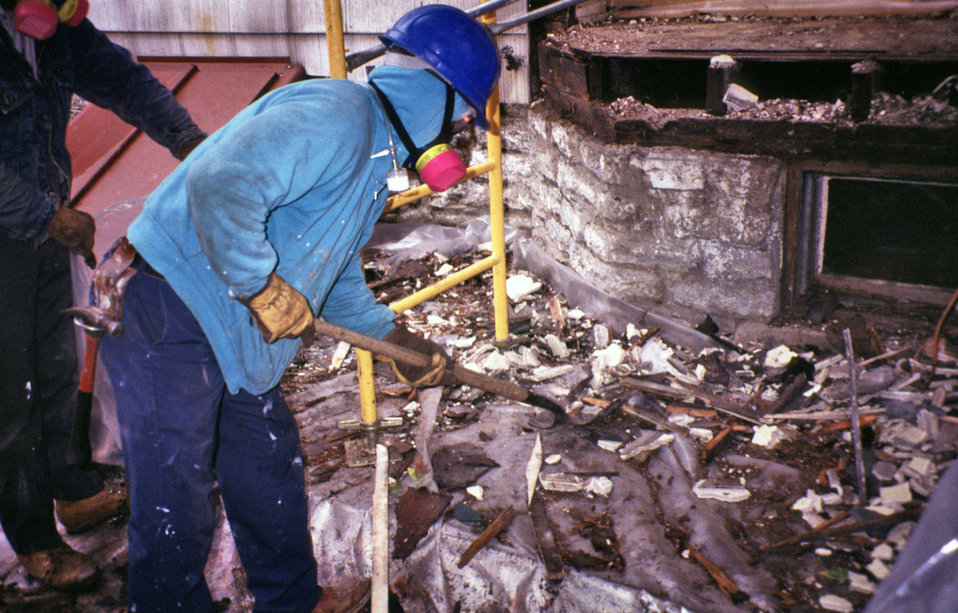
This 1993 photograph shows two masked workers removing debris from a bay window that had been dismantled by hand, demonstrating exterior renovation methods typically used on residences where lead-based paint was present.